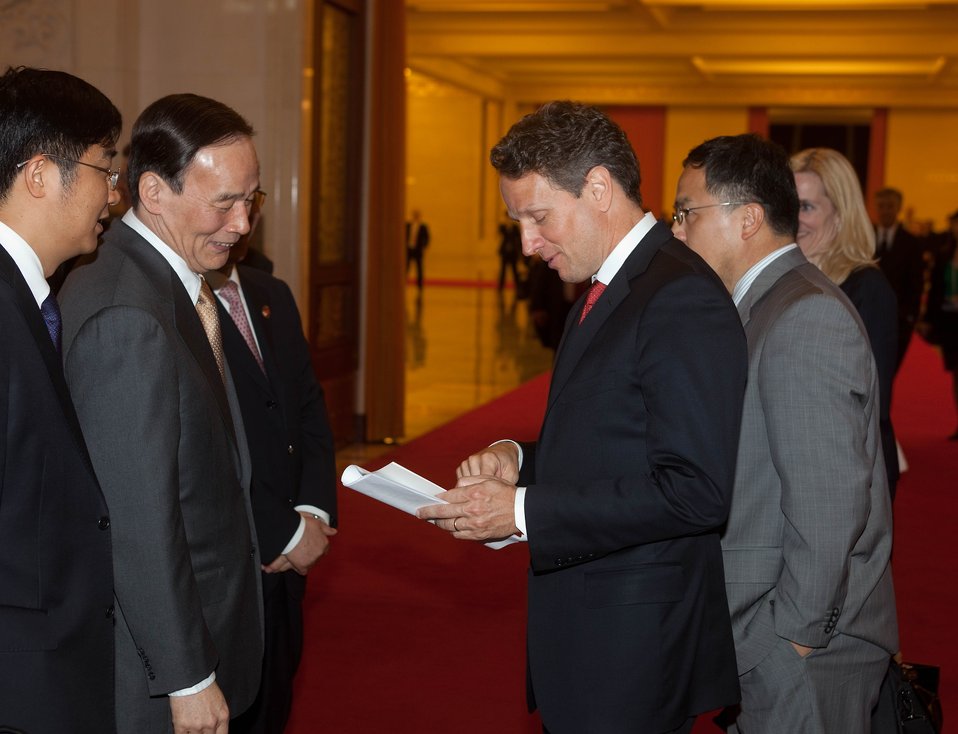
SandED 5/25/10

Secretary Geithner and Vice Premier Wang Qishan gathered before departing the Great Hall of the People.